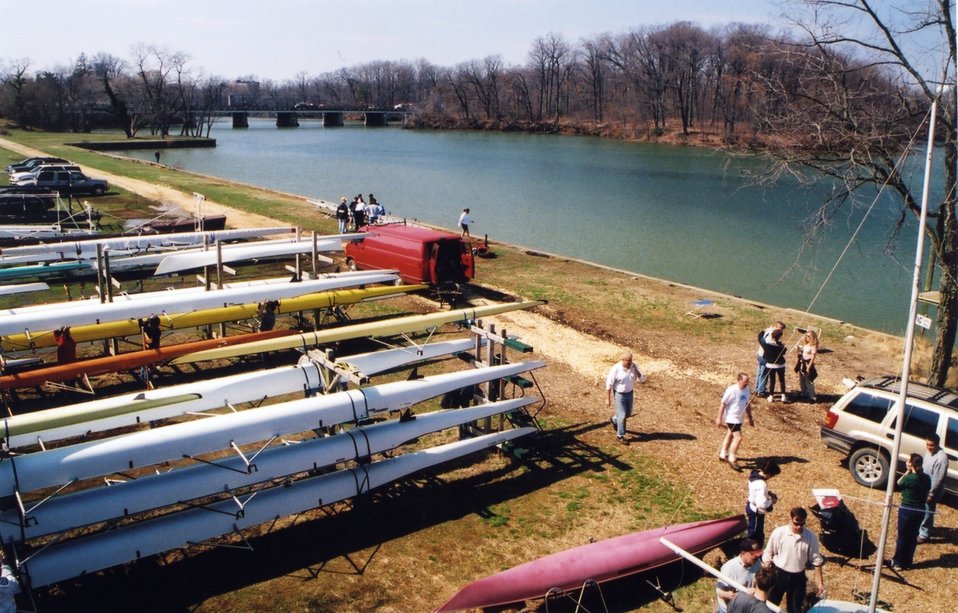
Annapolis area from St. John's College Boathouse.